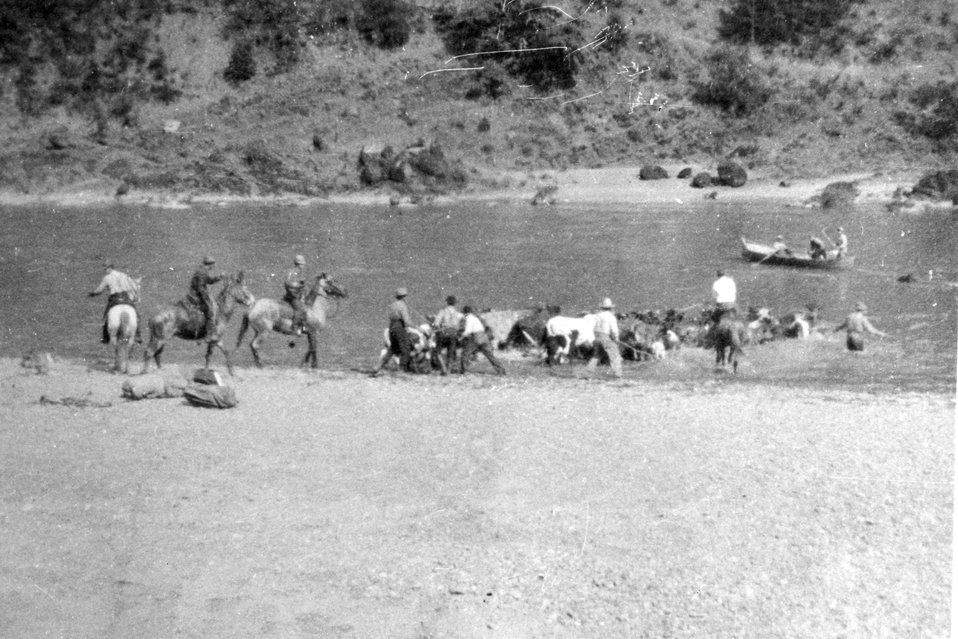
Swimming stock across Rogue River. C. 1910